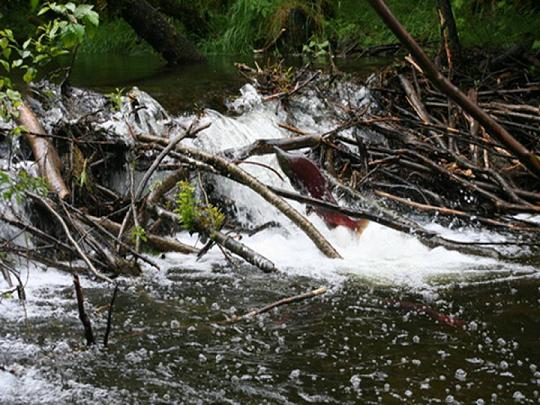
sockeye jumping steep ck dam

Sockeye salmon jump over a beaver dam along Steep Creek on the Tongass National Forest in Alaska.